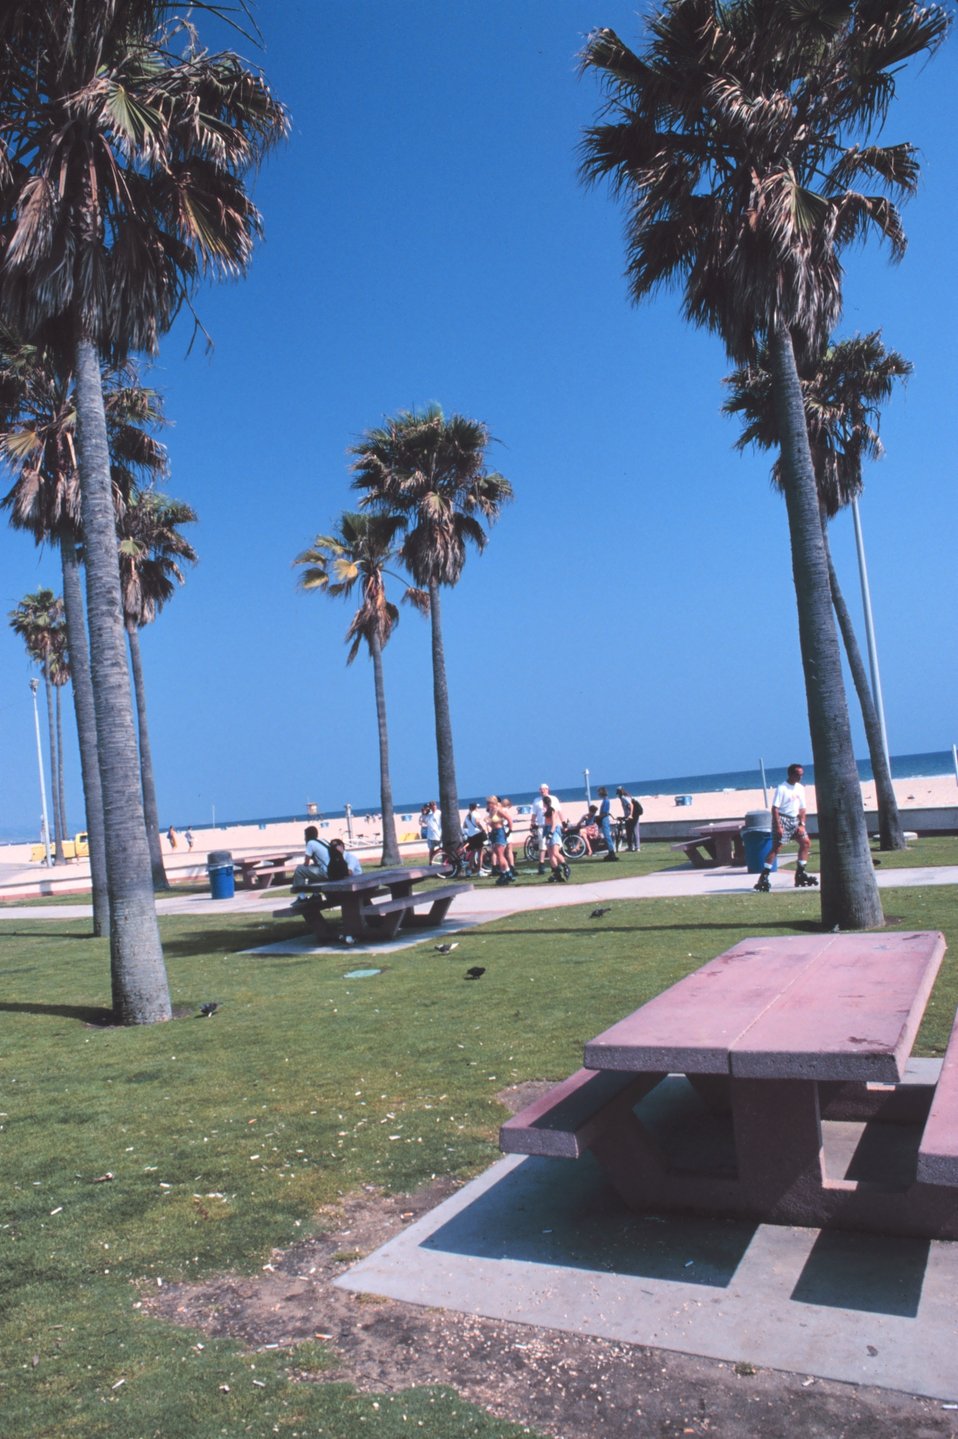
Southern California dreaming - the beach at Newport